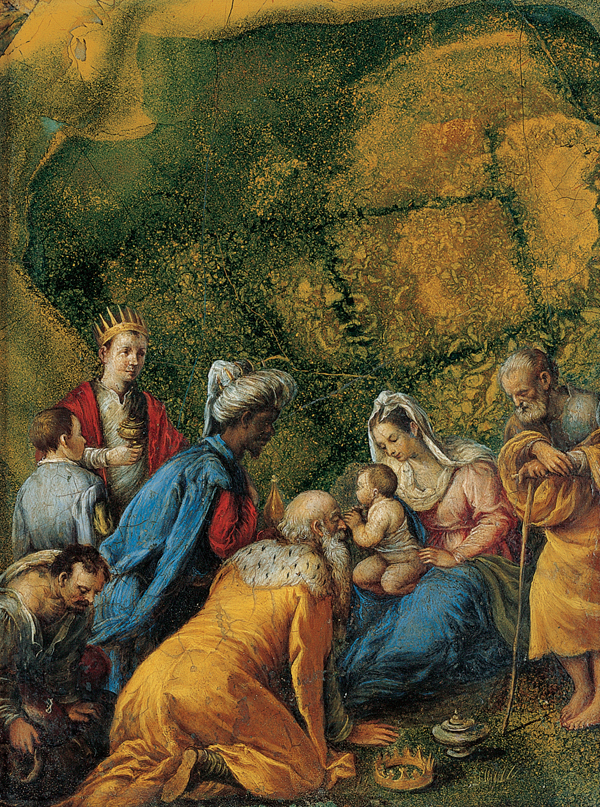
The Adoration of the Magi

'The Adoration of the Magi' Oil on jasper painting by Italian painter Jacopo Bassano (Jacopo dal Ponte).